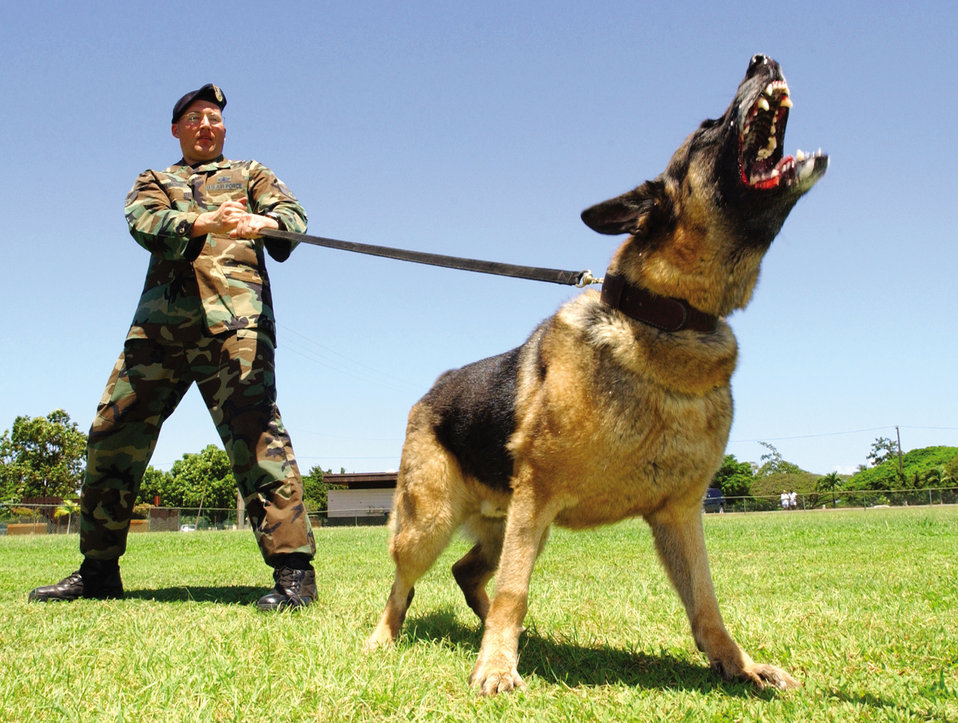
Ruff competition

HICKAM AIR FORCE BASE, Hawaii -- Borris, a military working dog, shows he means business as his handler, Staff Sgt. Steven Redmond, holds him back during the Pacific Air Forces Military Working Dog Competition here. The pair are from Misawa Air Base, Japan.